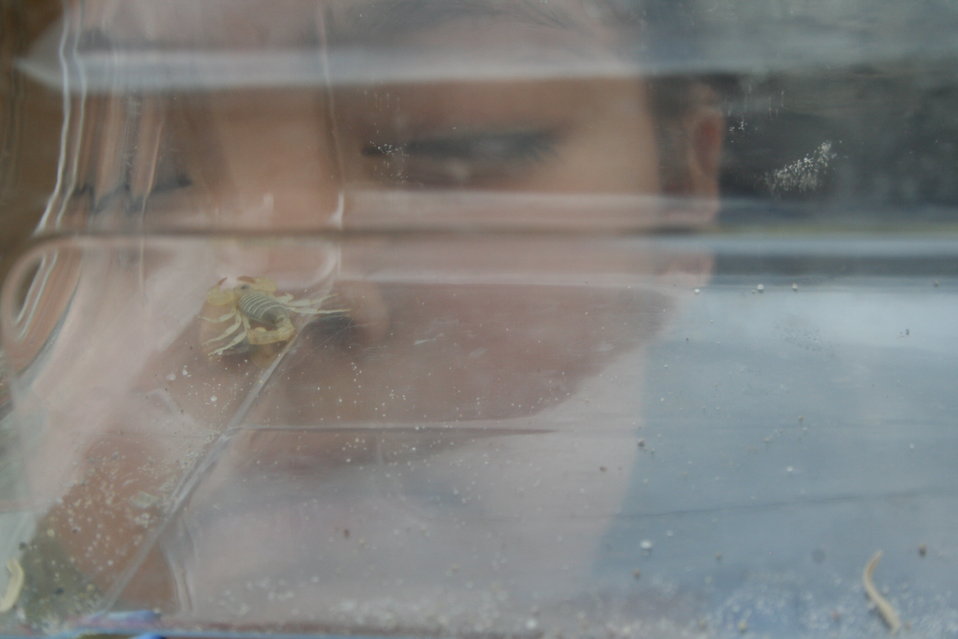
Scorpion up-close.

A student peers closely at a small scorpion that was caught in a pitfall trap the night before. Cyndi Souza/USFWS photo, 9-10-2011.